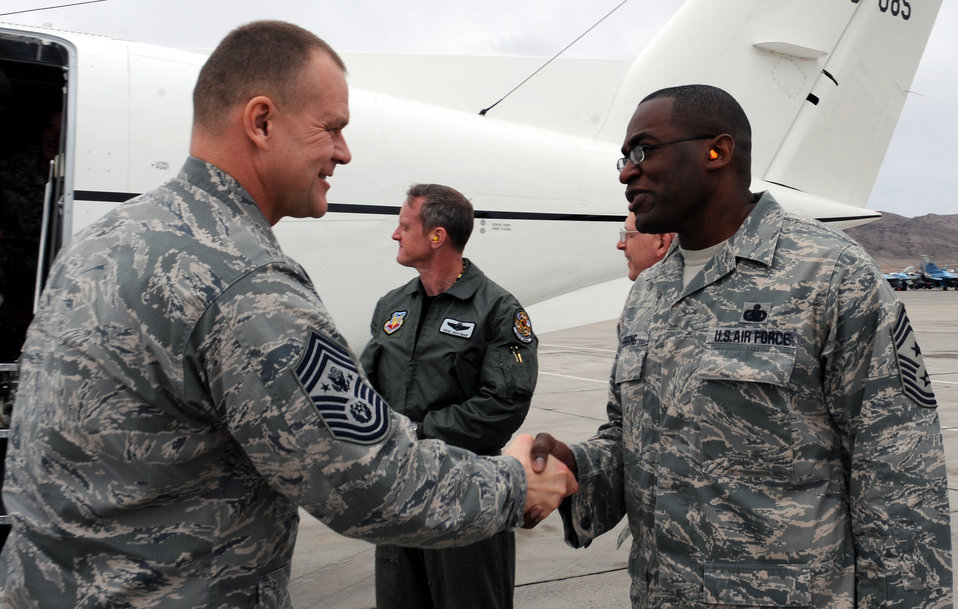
Chief Master Sgt. of the Air Force visits Nellis Air Force Base

Chief Master Sgt. of the Air Force James A. Roy is greeted by Chief Master Sgt. Alfred Herring at base operations Jan. 22, 2010 at Nellis Air Force Base, Nev. Chief Herring is the the 99th Air Base Wing command chief.